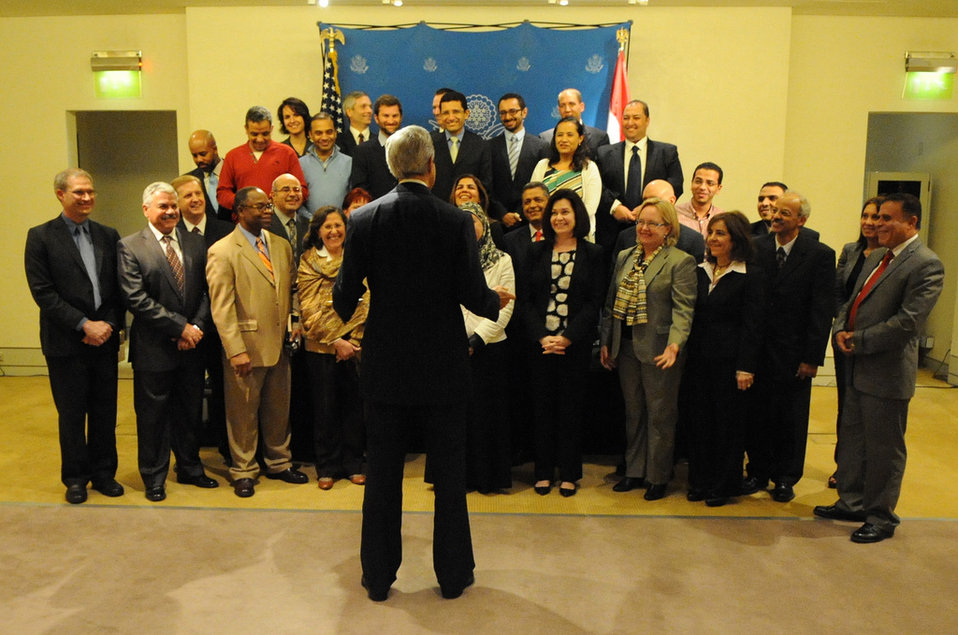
Secretary Kerry Greets Embassy Cairo Staff

U.S. Secretary of State John Kerry says hello to staff members from the U.S. Embassy in Cairo, Egypt, on November 3, 2013.